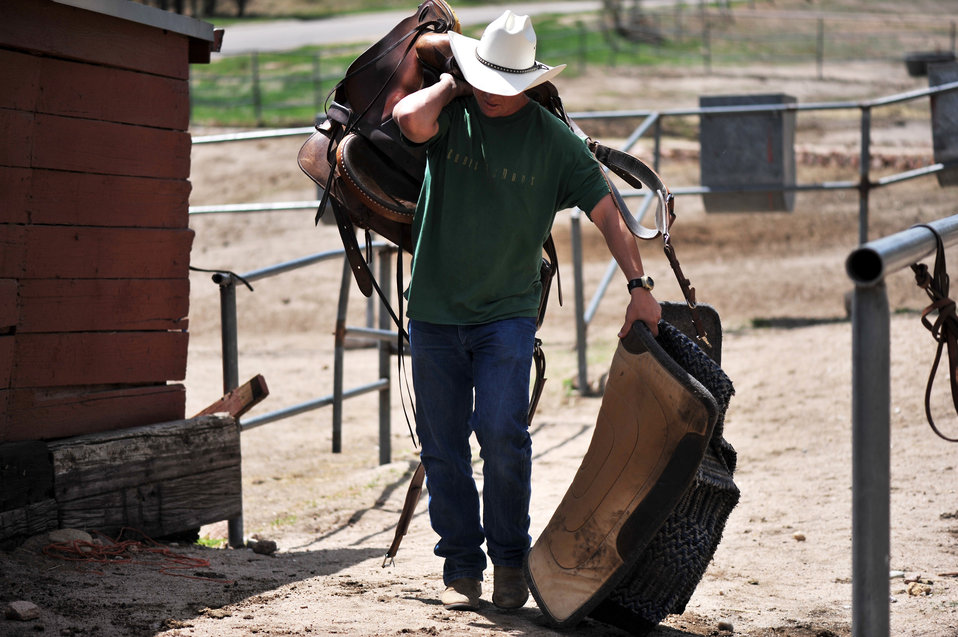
Warrior Wellness Program

U.S. Army Sgt. Dale Chick returns a saddle to the stables after riding a horse at the equestrian center April 26, 2012, at the U.S. Air Force Academy in Colorado Springs, Colo.
Chick said volunteering at the stables and working with horses helps him find inner peace and comfort after being deployed in Iraq and Afghanistan.